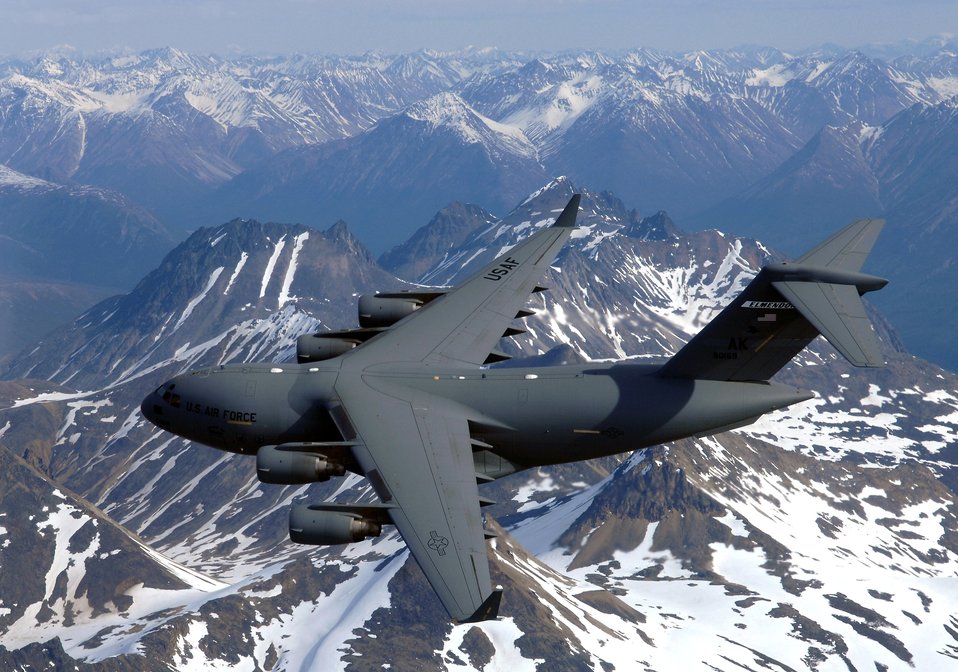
Elmendorf celebrates C-17 arrival

The